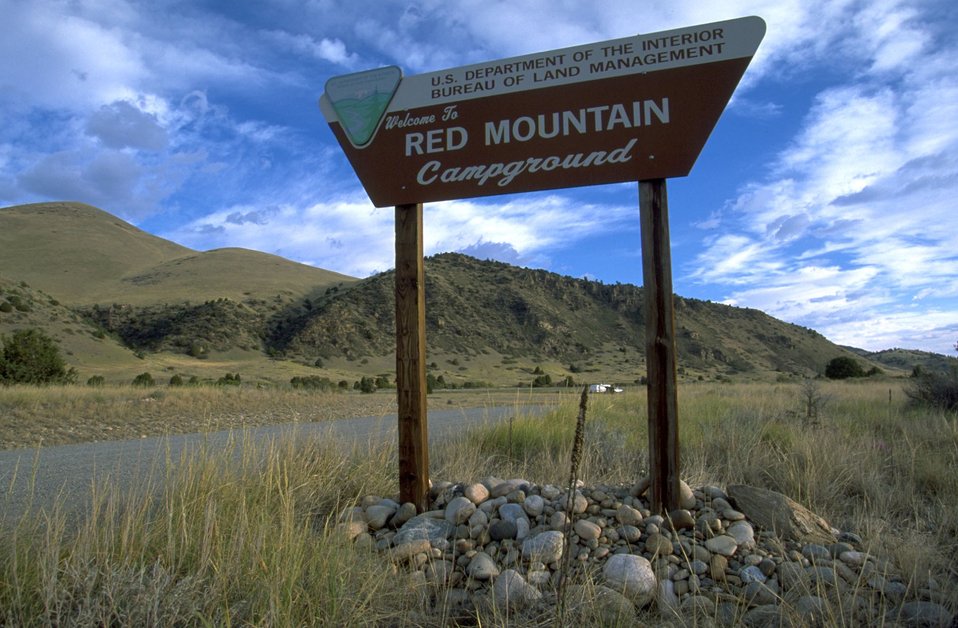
Red Mountain Campgrounds Entrance Sign